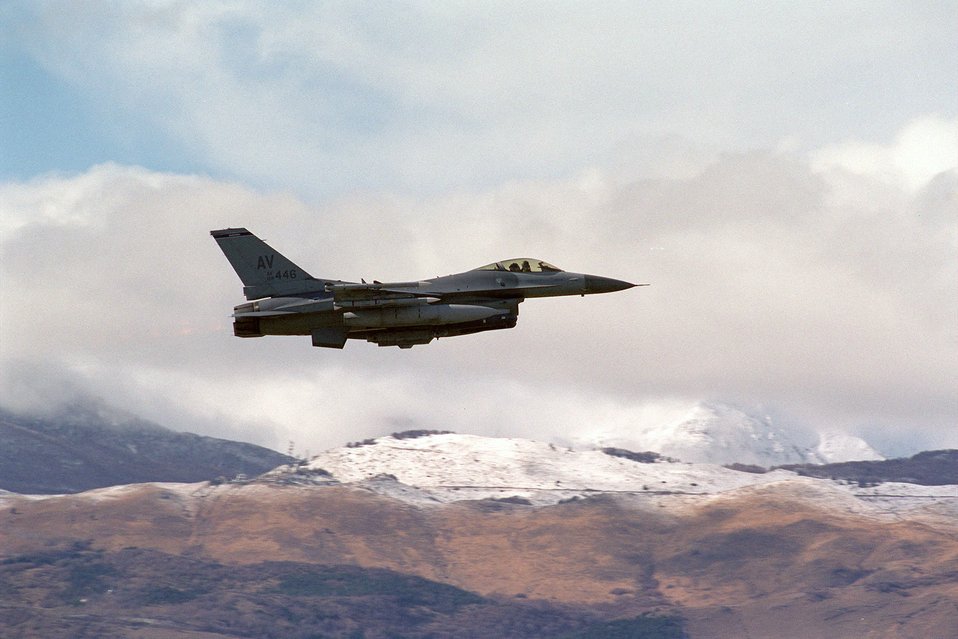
Operation Allied Force

A F-16 Fighting Falcon flies over Aviano Air Base, Italy, as it departs for an NATO Operation Allied Force mission in the Balkans March 27, 1999.